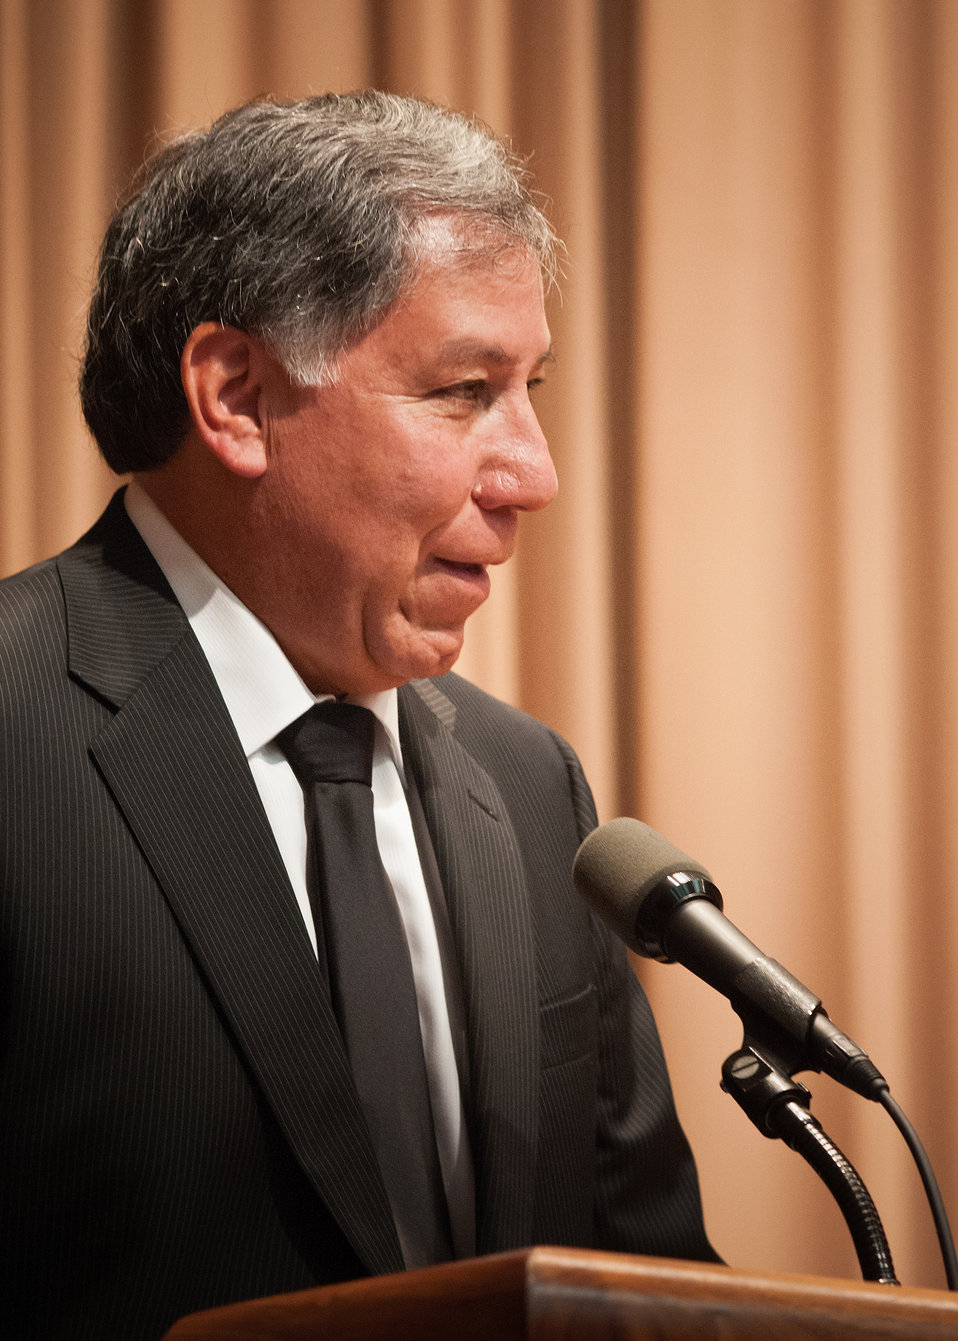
Agriculture Under Secretary for Marketing and Regulatory Programs Edward Avalos gives the closing remarks at the U.S. Department of Agriculture 2012 Hispanic Heritage Month celebration in Washington, D.C. on Thursday Sept. 20, 2012. The theme of the event was, “SOMOS UNO” “We Are One” Diversity United, Building America’s Future Today.